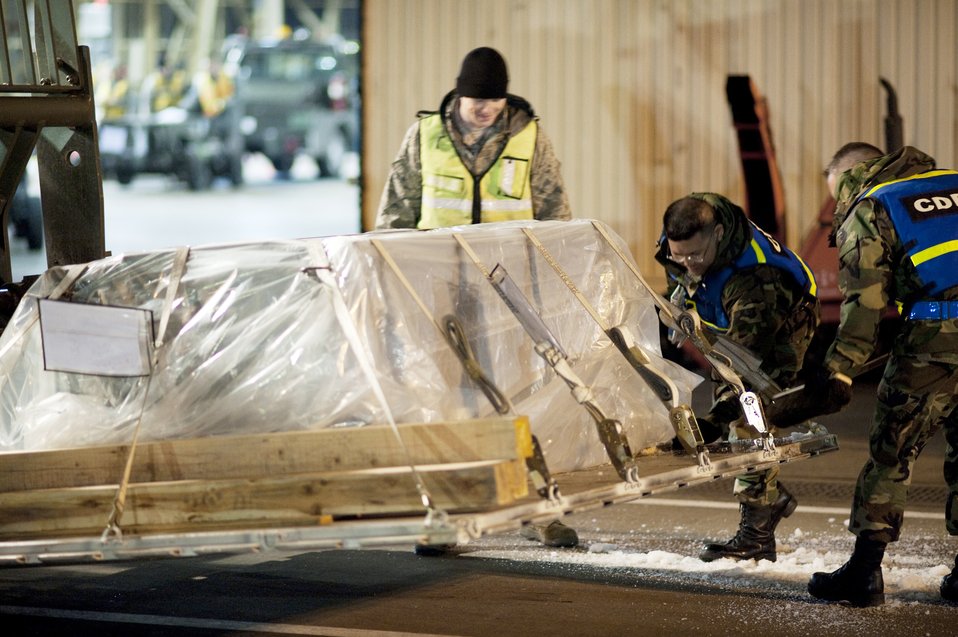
Misawa operations after dark

Airman 1st Class Alex Russell, Staff Sgt. Travis Baker and Staff Sgt. Ronald Stoll brush ice and snow off of an aircraft pallet outside a hangar at Misawa Air Base, Japan, during an operational readiness exercise Jan. 28, 2010. The snow had to be removed in order to get an accurate weight for flight.